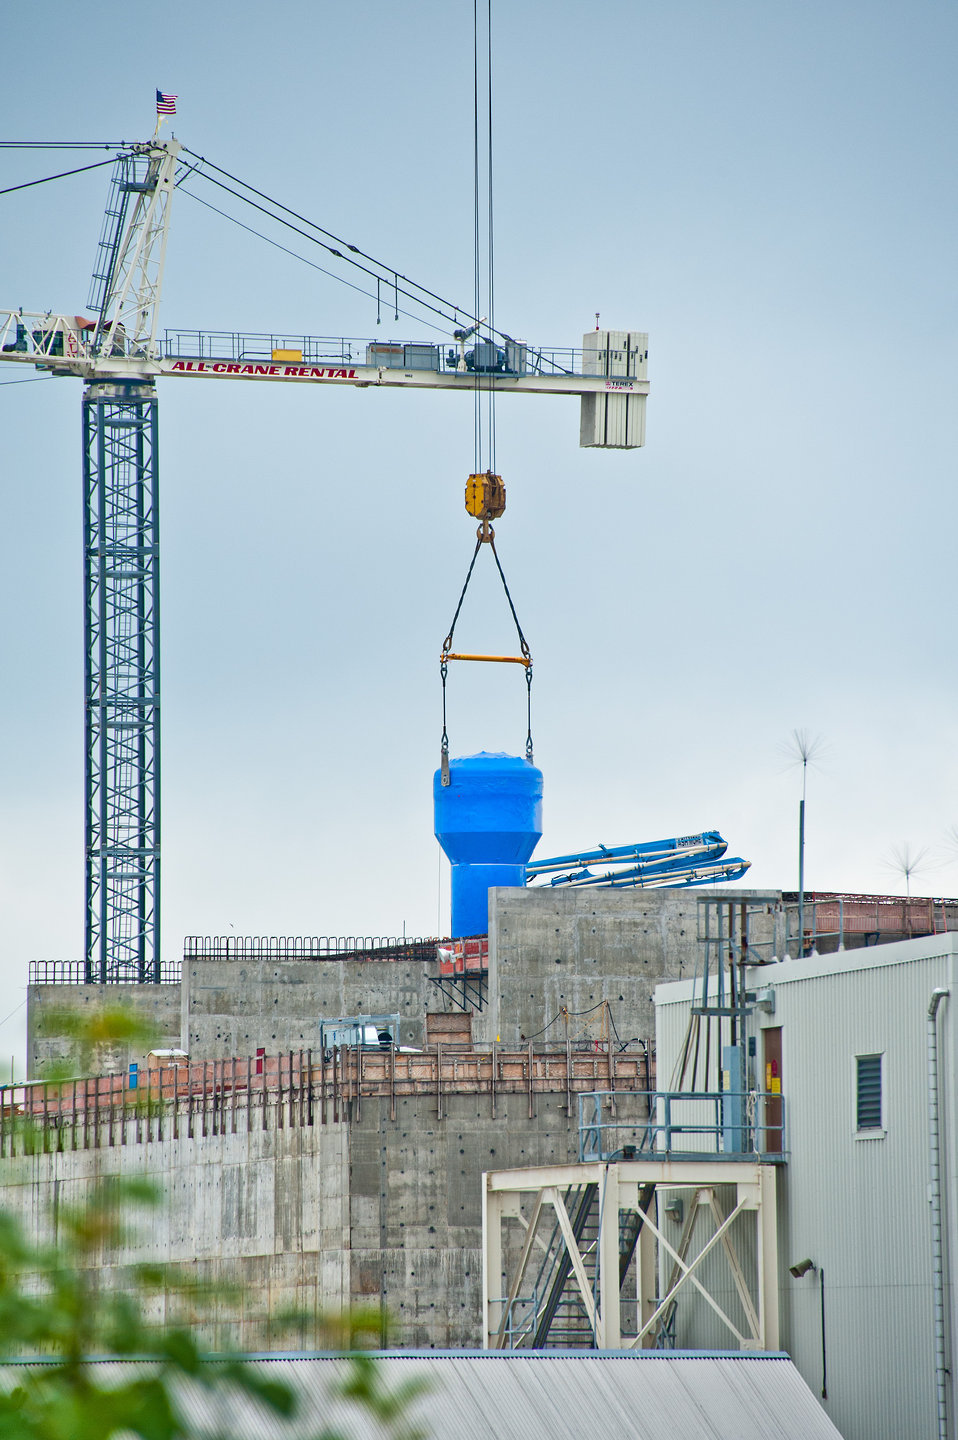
SRS Processing Tanks

A major construction milestone is met with the successful installation of six of 10 planned large processing tanks at the Savannah River Site’s (SRS) Salt Waste Processing Facility (SWPF). Installation of these critical facility components advances SWPF construction, allowing for piping and facility floors to be completed and the facility roof put into place. Slated for operation in late 2015, SWPF is designed to treat 33 million gallons of salt waste currently stored in underground tanks at SRS.